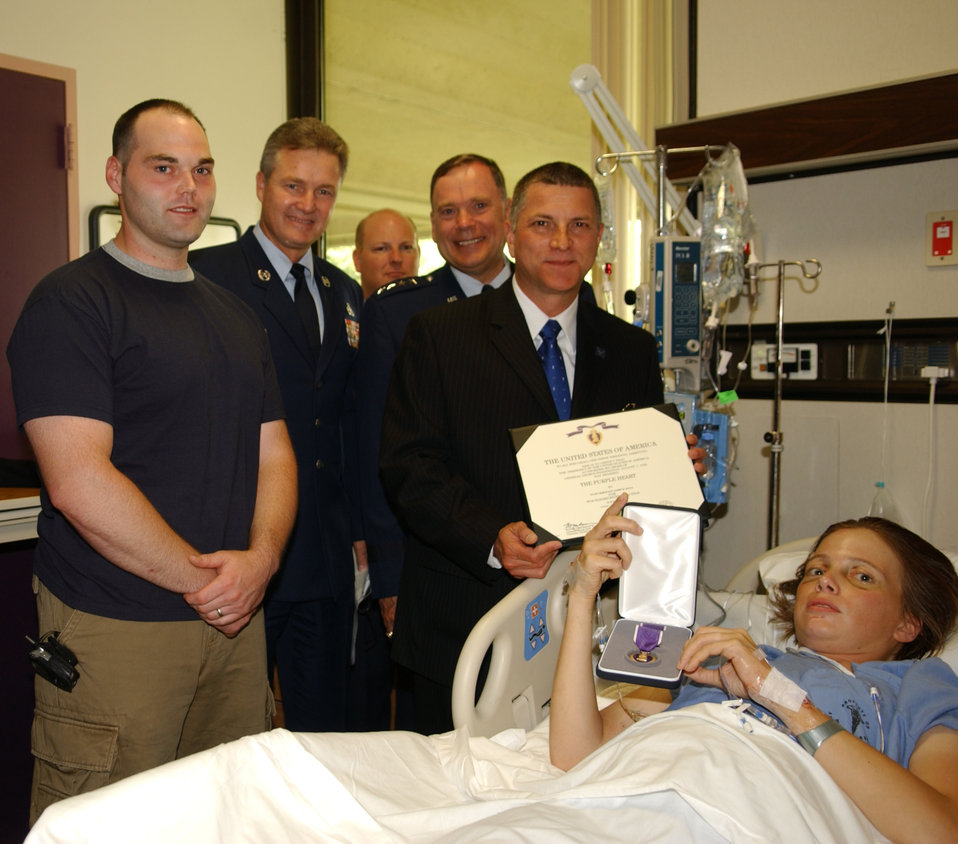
Airman presented Purple Heart

WASHINGTON -- Tech. Sgt. Jamie Dana was presented the Purple Heart on July 22 by (from right) Michael L. Dominguez, acting secretary of the Air Force, Air Force Chief of Staff Gen. John P. Jumper and Chief Master Sgt. of the Air Force Gerald R. Murray, as her husband, Mike, stands by. Sergeant Dana was wounded when an improvised explosive device struck the Humvee she was riding in Southwest Asia. She is a military working dog handler with the 21st Security Forces Squadron at Peterson Air Force Base, Colo.